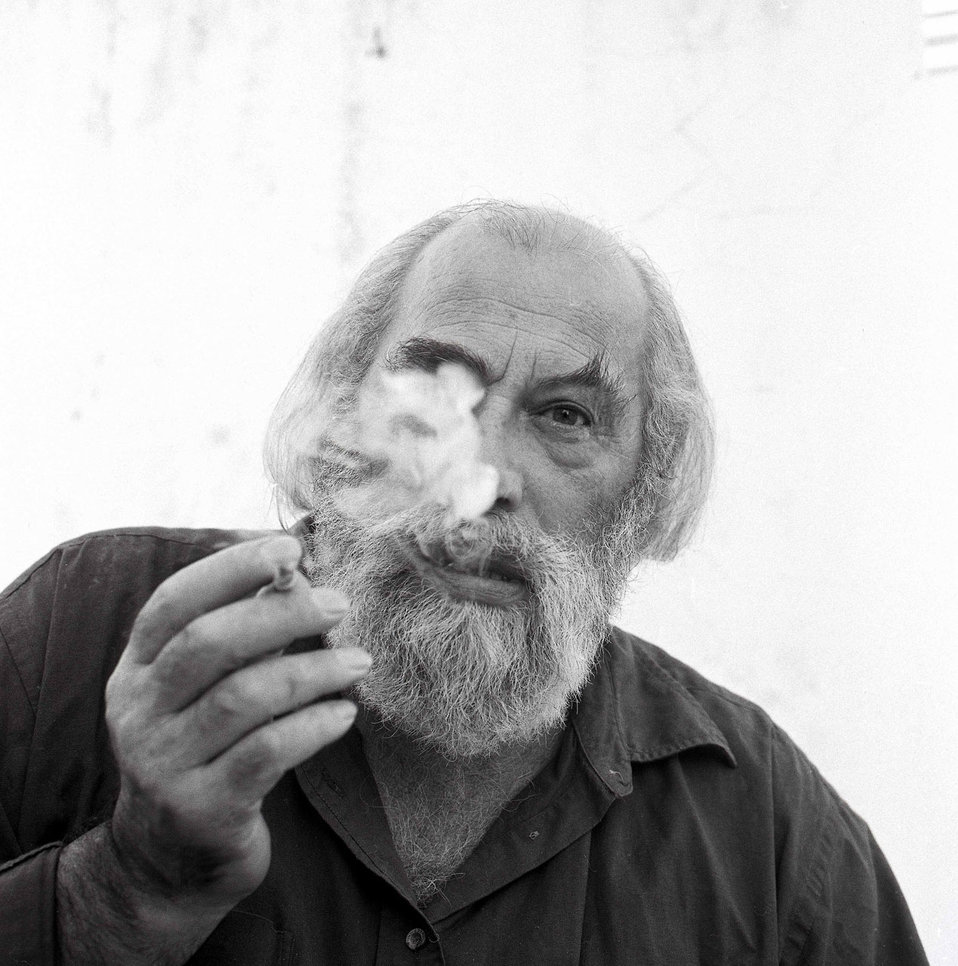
Valentin

Self portrait.